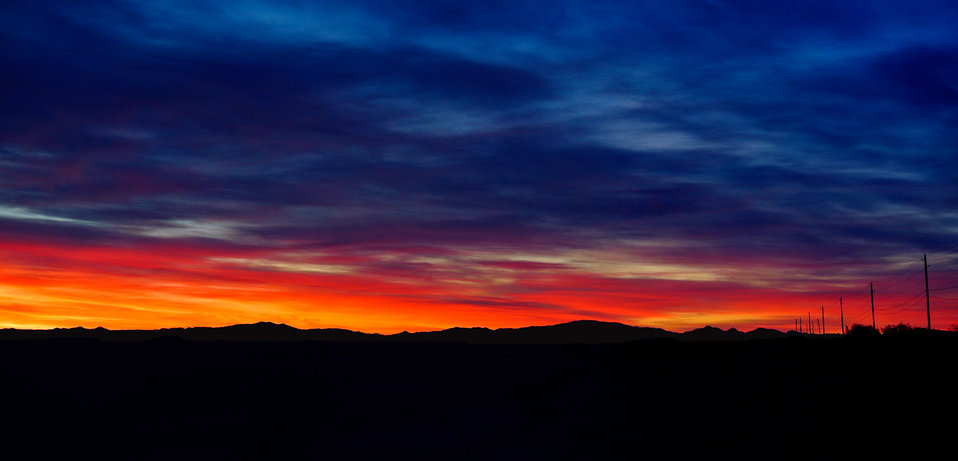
Arizona sunrise panorama

Arizona sunrise.